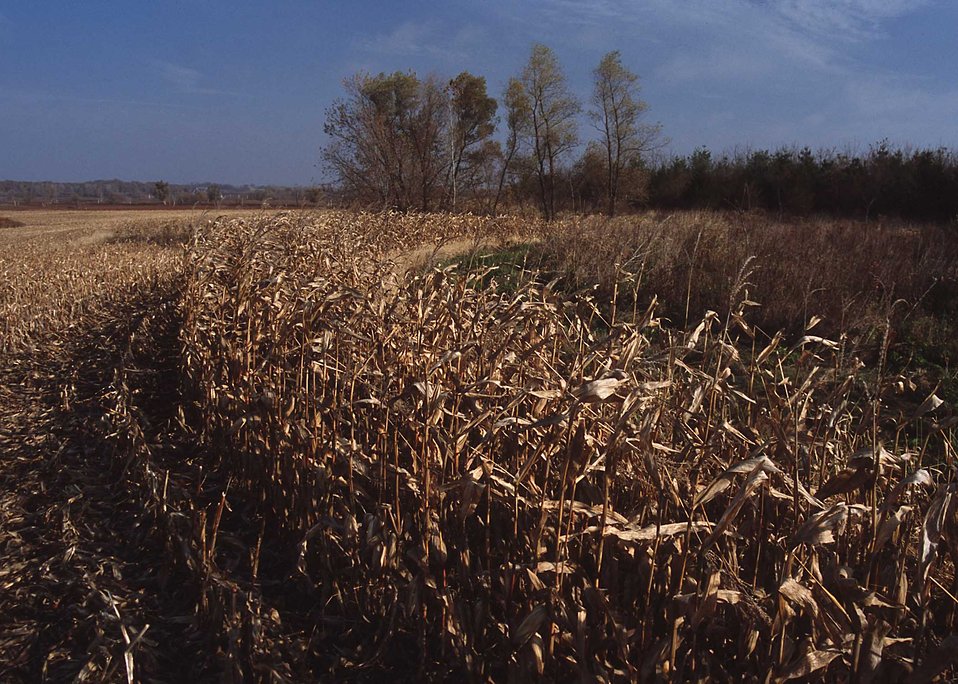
Leaving a few rows of unharvested corn or other grain near good wildlife cover adds to habitat for a number of species of wildlife.